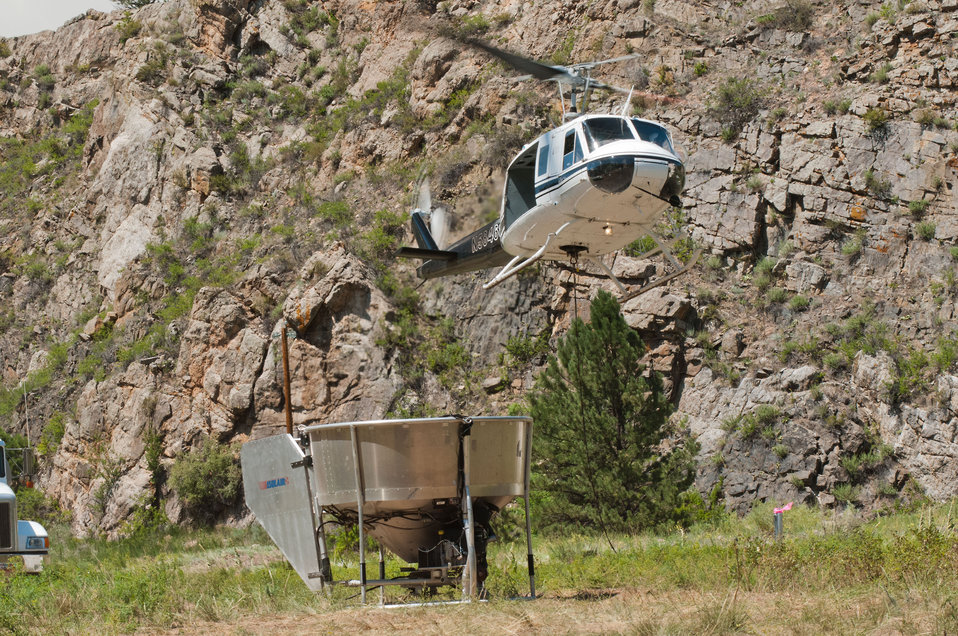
Mountain West Helicopter pilot Randy Mason takes off in a Bell UH-1H (2-blade rotor) after being refueled at the Seaman Reservoir spillway, near Fort Collins, Colo., on Friday, July 20, 2012. In the foreground is an aerial seed spreader, used in the continuing aerial application of straw and seed mix to mitigate soil and ash runoff from the mountainous terrain leading to Seaman Reservoir, drinking water resource for the City of Greeley. The 100-150-foot cable below it holds and releases loads of certified straw weighing 1,400 – 2,000 pounds. Forest service lands received straw, while private and other lands receive a seed mix and straw to promote ground cover plant growth on ash-covered lands. In total, 1,800 tons of straw will be applied during the 14-day operation. One quarter of the cost was paid by the City of Greeley and the U.S. Department of Agriculture funded the remainder. The Hewlett Gulch Fire was started by a camper’s alcohol stove, on May 14, at the saddle of a picturesque mountain ridge along the Hewlett Gulch Trail of Poudre Canyon, in the Roosevelt National Forest, 60 miles north of Denver. At it’s peak more than 400 firefighters were battling fires being pushed by 50 mph winds that helped blacken over 12-square-miles of dry ground cover, brush and trees. Many of the trees were already dead and tinder dry from beetle-kill. Their efforts have successfully kept water in the reservoir clean and clear, while downstream water flow has gone from famous Colorado clear water to nearly black flows of water heavily laden with ash, silt, and burnt debris that recent thunderstorms have already washed down from the mountainsides.